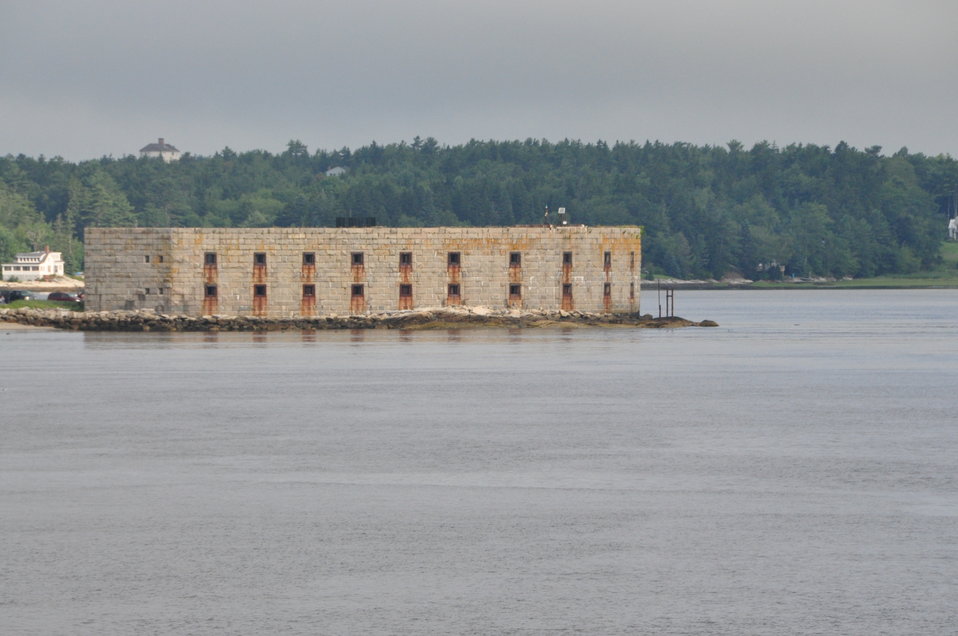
August 2009, View of Fort Popham from the deck of the Bold

Just up the Kennebec River, Bath Iron Works continues to build Navy Destroyers which often pass by this remnant of World War II. It was fun to get the water view of a place I'd often walked around from the shore.

- Jeanethe Falvey, lucky participant on this survey, EPA New England Public Affairs office.